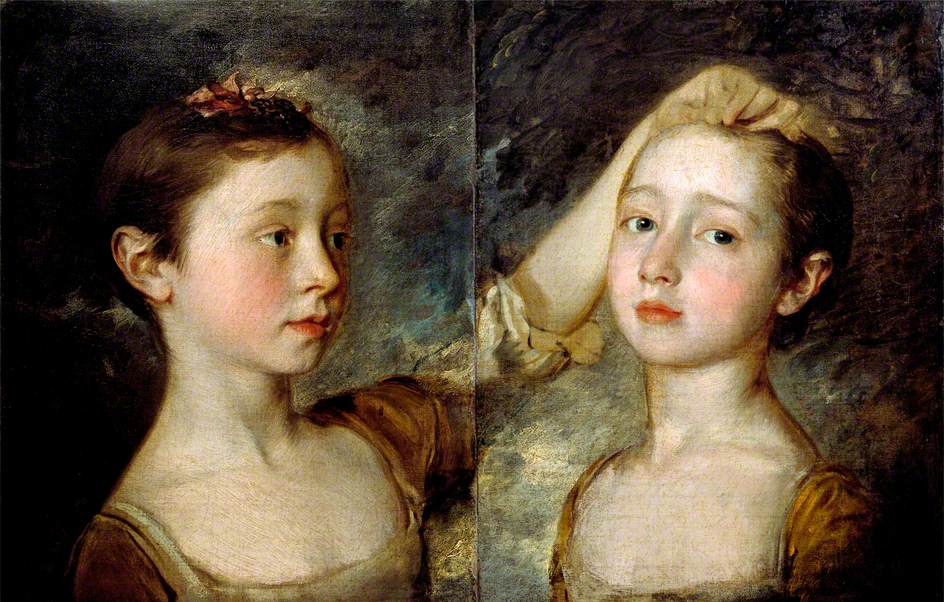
Thomas Gainsborough - Mary and Margaret Gainsborough, the artist's daughters